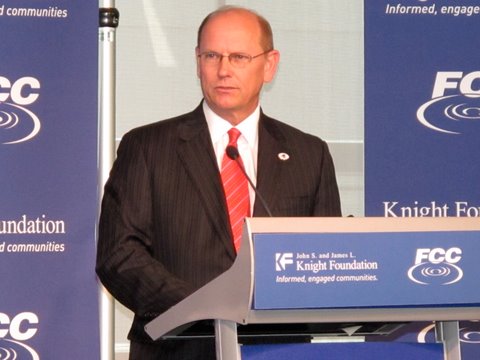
'Bonjour' Mayor Joey Durel of Lafayette, La. addresses America's Digital Inclusion Summit at The Newseum, March 9, 2010.